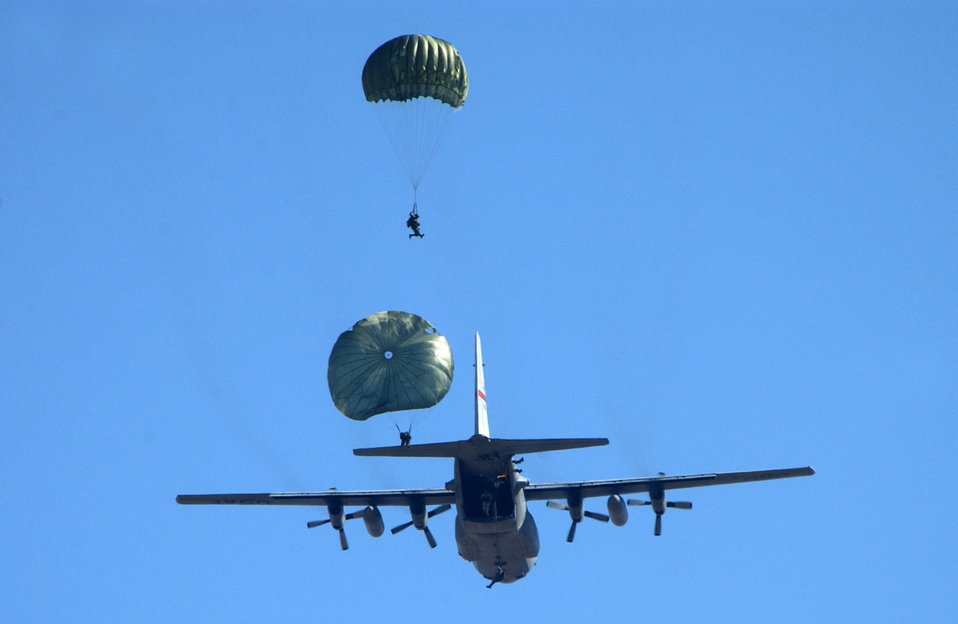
Ramstein Airmen support HALO exercise

A C-130 Hercules, similar to this one, participated in high altitude-low opening jump exercise Aug. 2 over an airfield near Banja Luka, Bosnia. U.S. and Bosnian jumpers participated in the HALO exercise. The aircrew and plane were from the 37th Airlift Squadron at Ramstein Air Base, Germany.